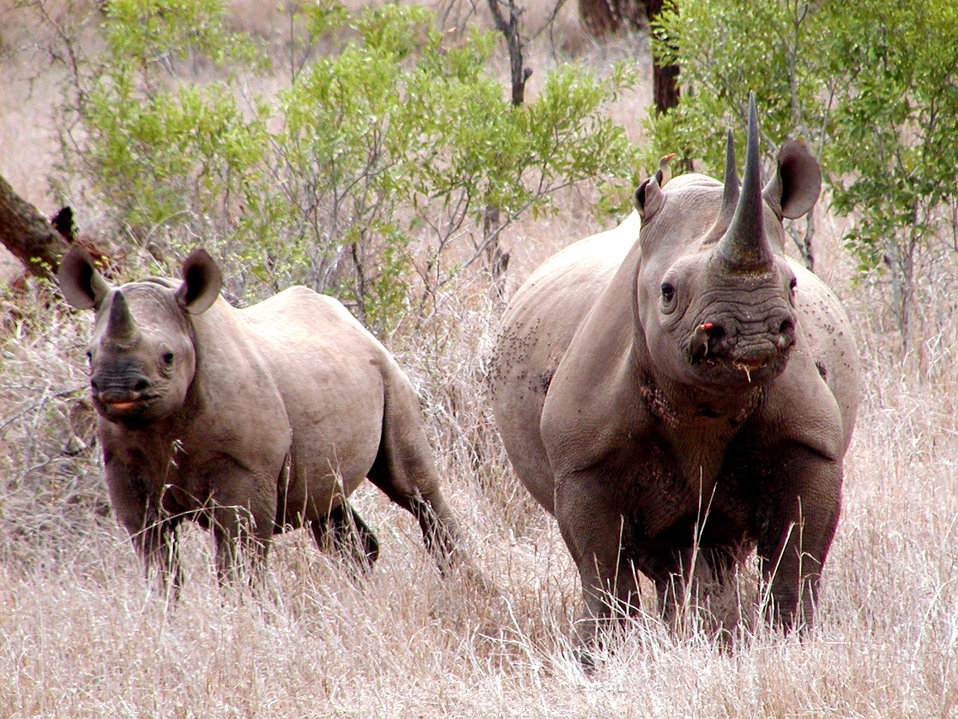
Black rhinos

Two black rhinos in Mkhuze Africa